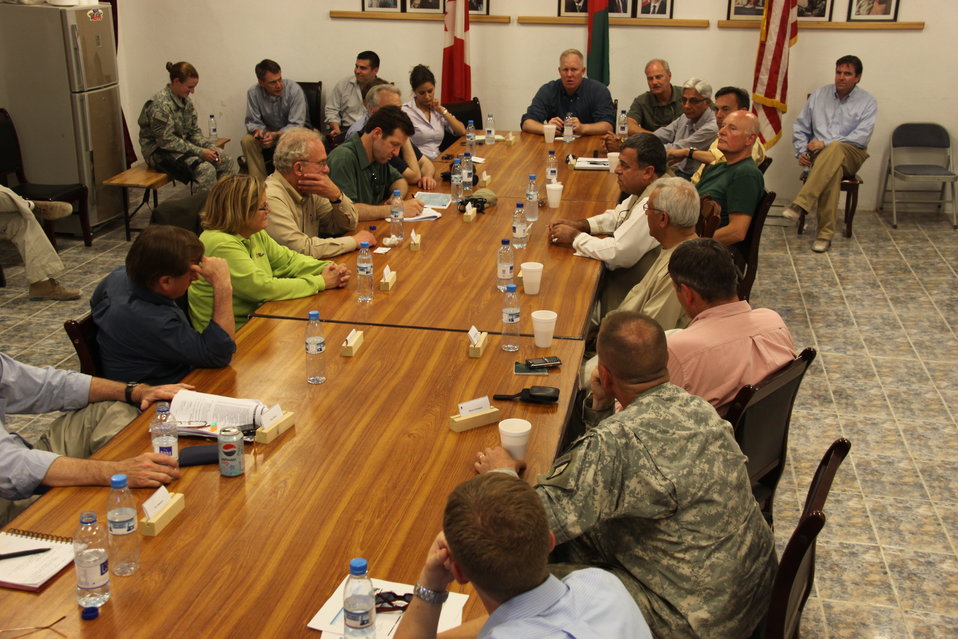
Meeting with Local Leaders in Kandahar